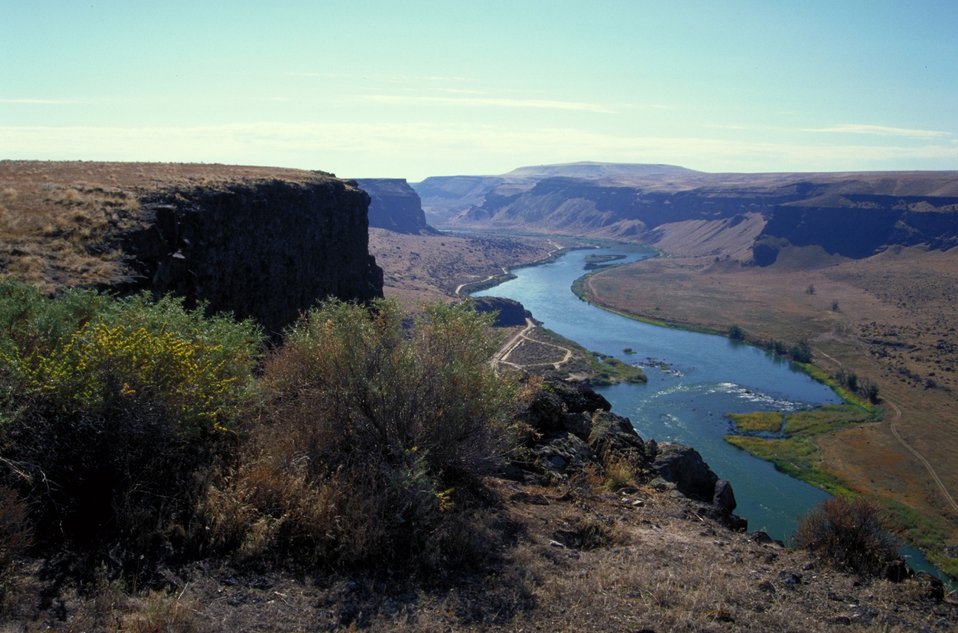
Snake River Birds of Prey National Conservation Area Scenic Four Rivers Field Office Lower Snake River District LSRD